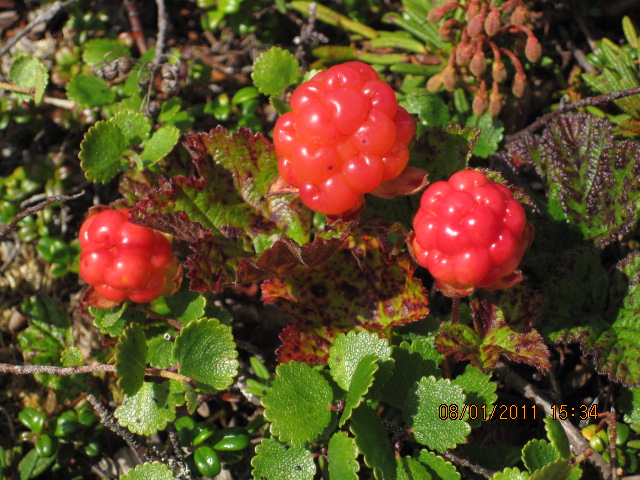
Berries

Salmon berries also called cloud berry are a favorite of locals. They are typically used in agutuk (Eskimo ice cream), jellies, or eaten as they are being picked.

USFWS Yukon Delta NWR